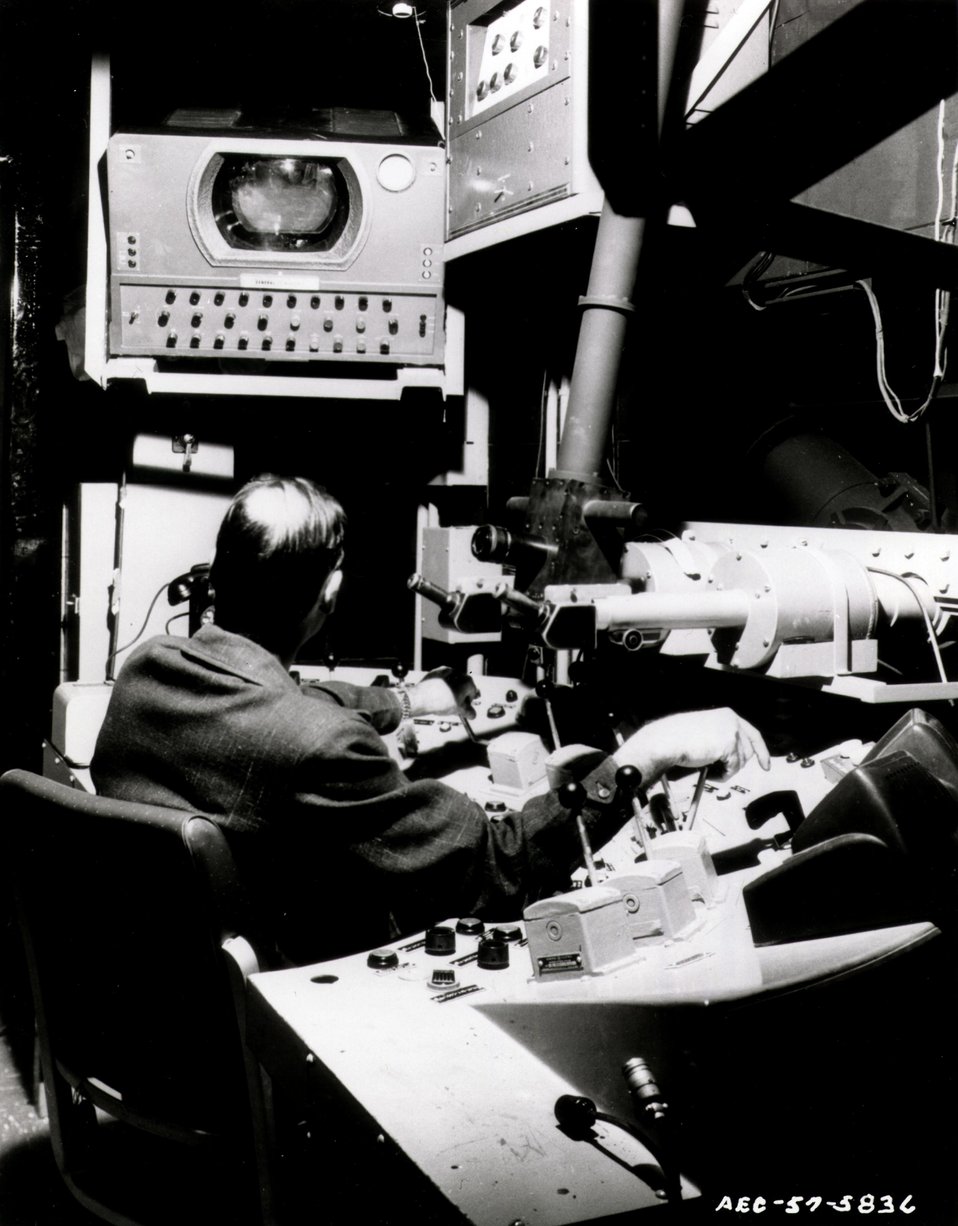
The newest separations plant at Hanford now has an overhead crane in the canyon equipped with color television to help the crane operator get a better view of what he is doing than his periscope could give. Circa 1957.